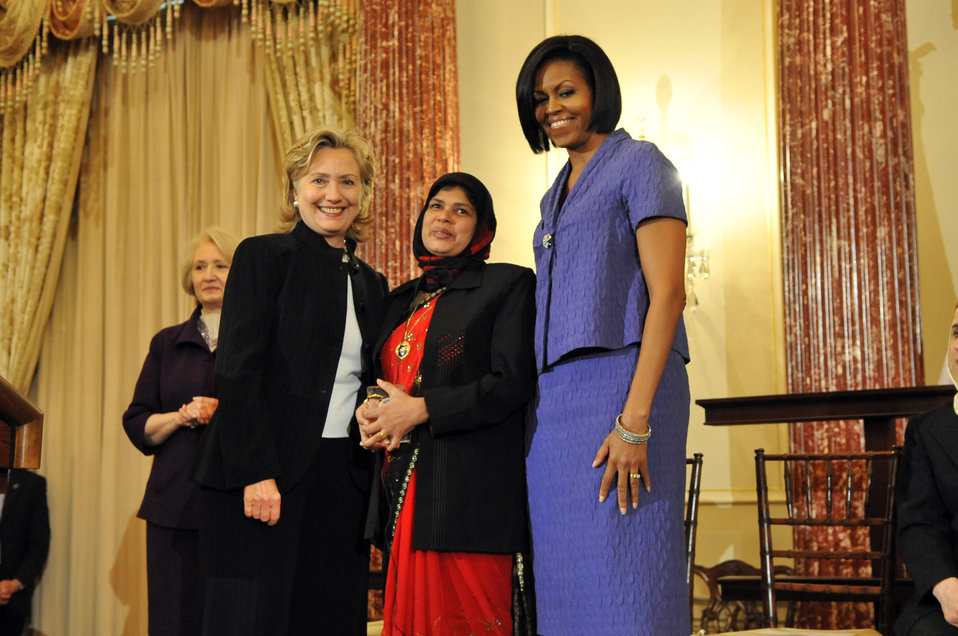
Secretary Clinton With First Lady Michelle Obama and Jansila Majeed of Sri Lanka

U.S. Secretary of State Hillary Clinton and First Lady Michelle Obama stand with Honoree Jansila Majeed of Sri Lanka at the 2010 International Women of Courage Awards at the U.S. Department of State, Washington, D.C. March 10, 2010.